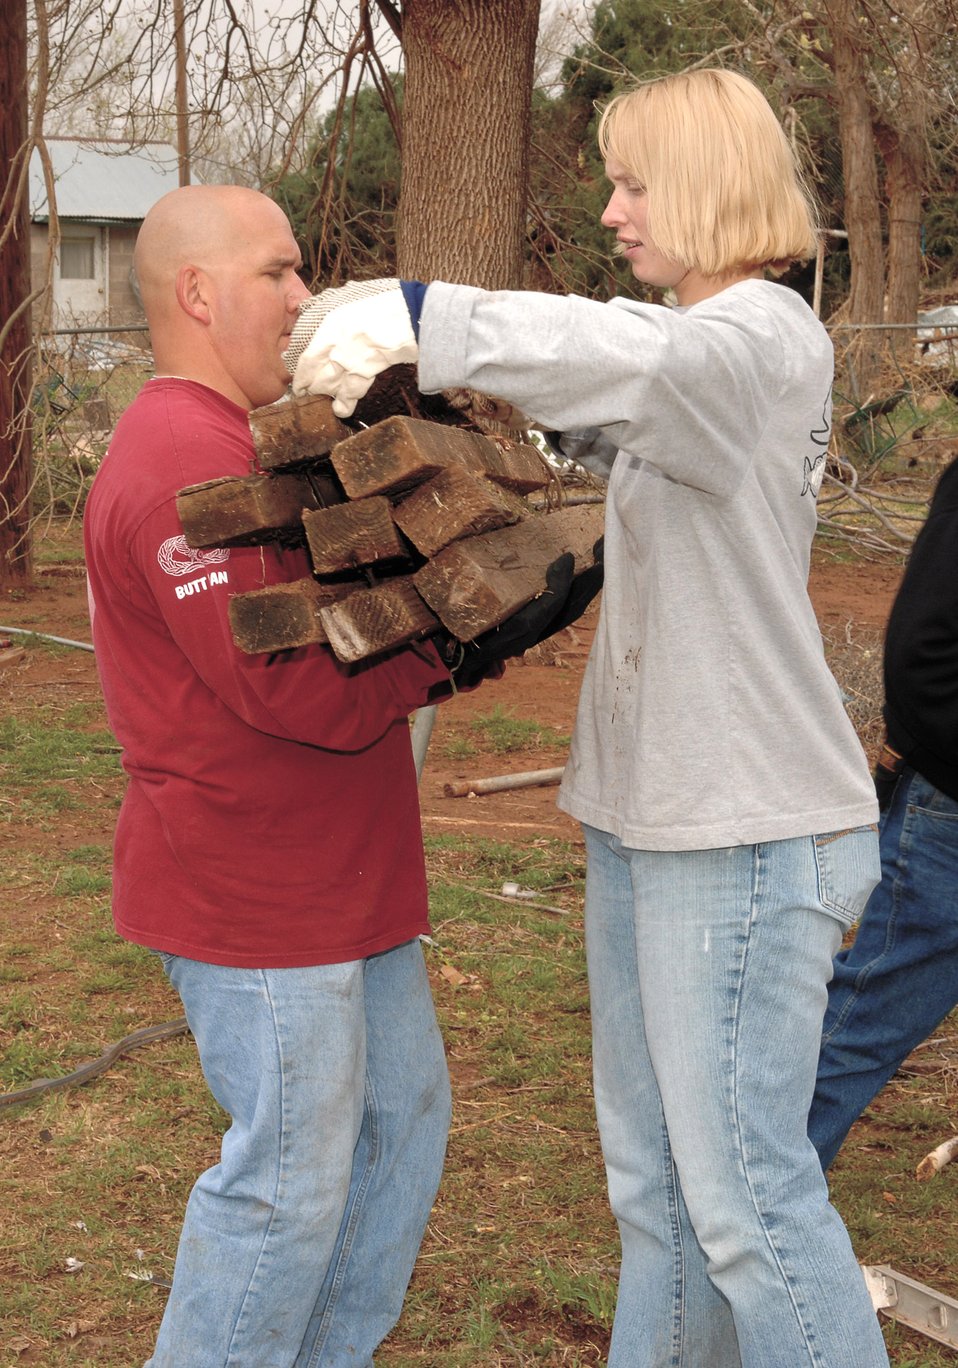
Cannon volunteers lend hands, hope in wake of disaster

Staff Sgt. Gerri Finan loads up the arms of Master Sgt. Eric Butt with scrap wood from piles of debris at Yucca Junior High in Clovis, N.M. These 27th Communications Squadron Airmen are among the more than 500 volunteers from Cannon Air Force Base, N.M., who began restoring nearby Clovis, after tornadoes ripped through the town March 23.